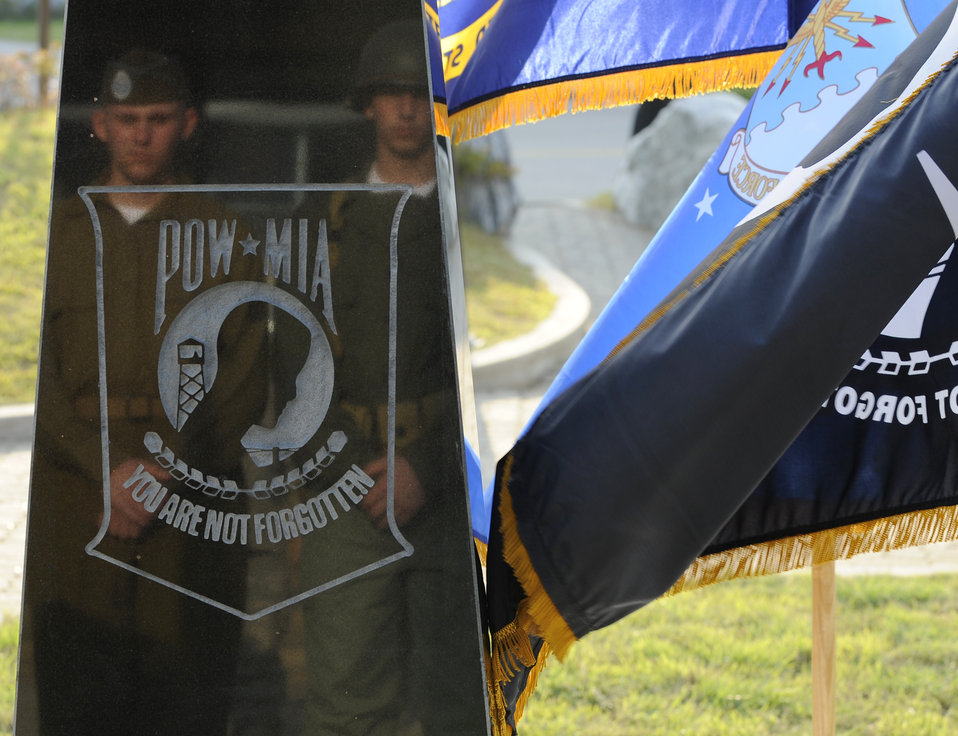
Osan officials dedicate POW/MIA memorial

Soldiers wearing historical military uniforms are seen in the reflection of the POW/MIA memorial during the POW/MIA remembrance ceremony in front of the base theater Sept. 18, 2009, at Osan Air Base, South Korea.